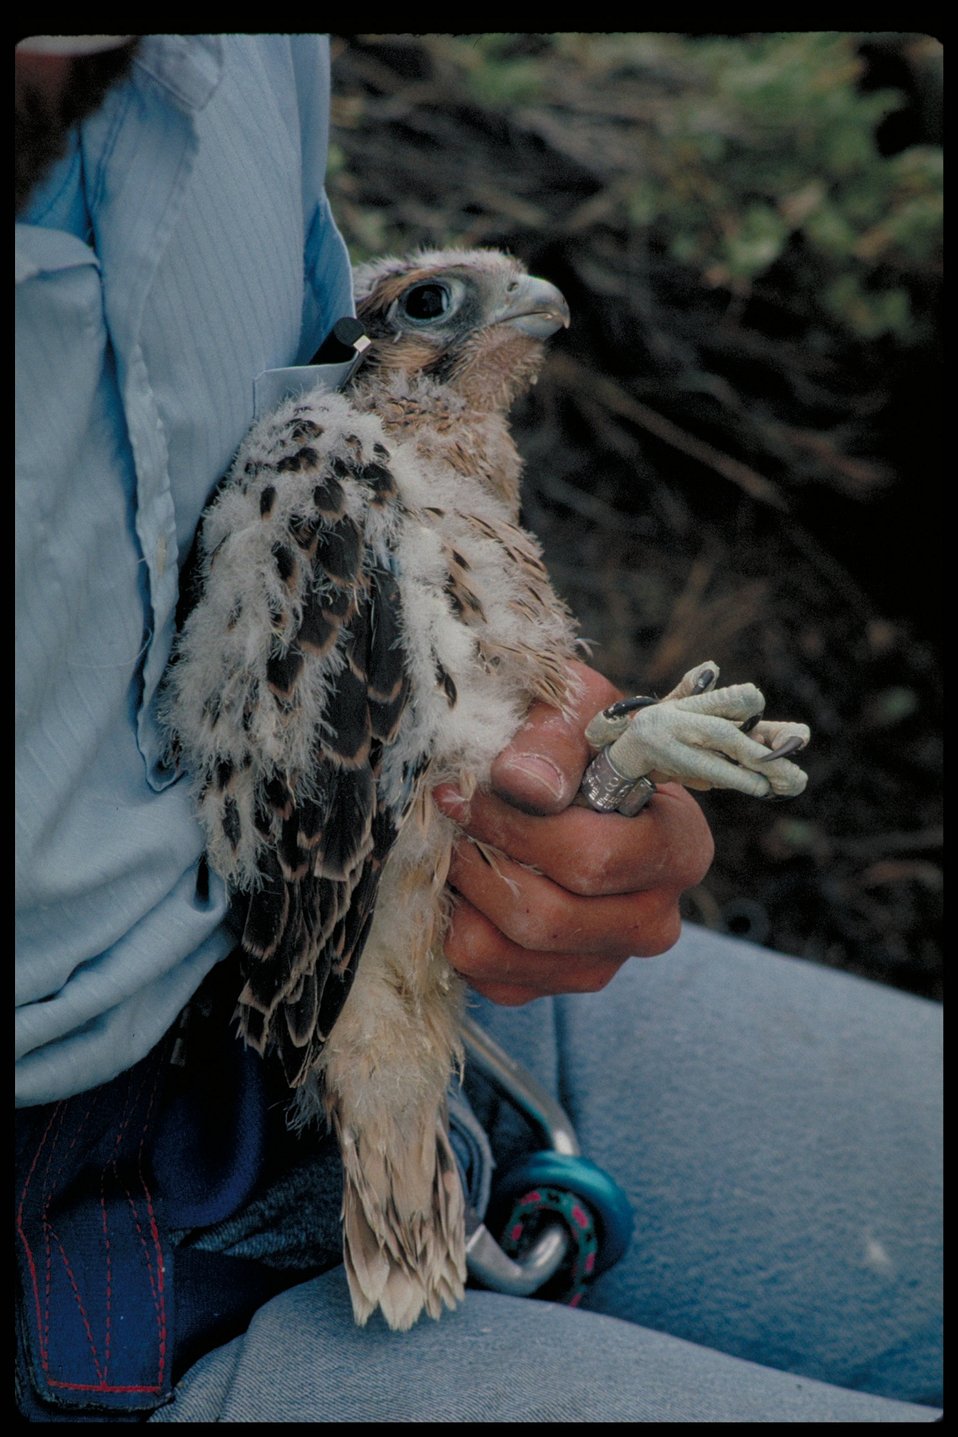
Birds of Prey National Conservation Area BOP Owyhee Field Office LSRD Lower Snake River District